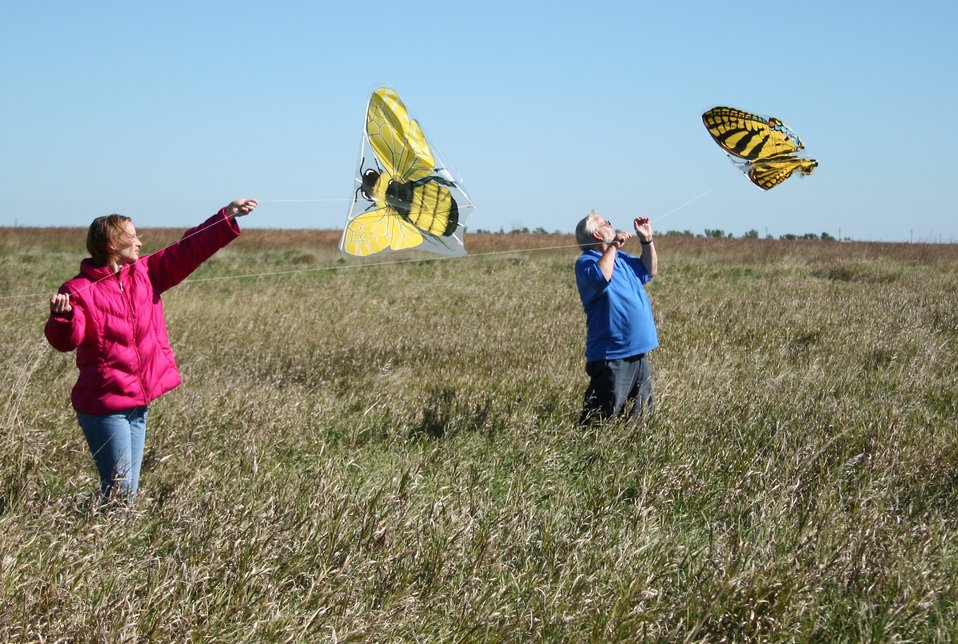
Visitors fly kites on a beautiful September afternoon in 2010 at the Huron WMD. The 'Kites N Flight' event focused on getting kids outdoors, and featured an educational piece on bird flight and migration.